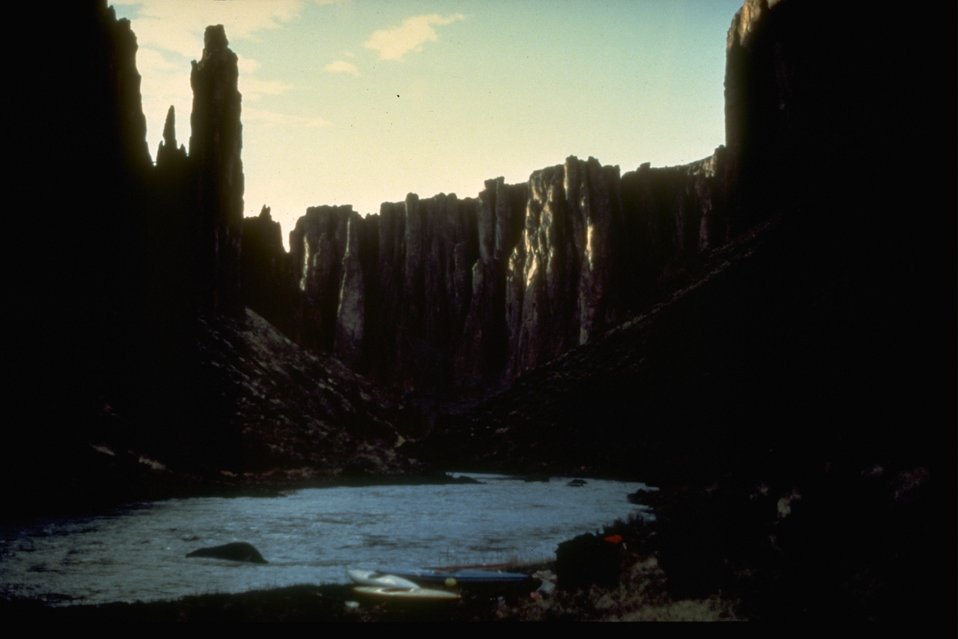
The large cliffs and rock formations surrounding the Owyhee River in the Owyhee River Canyon.